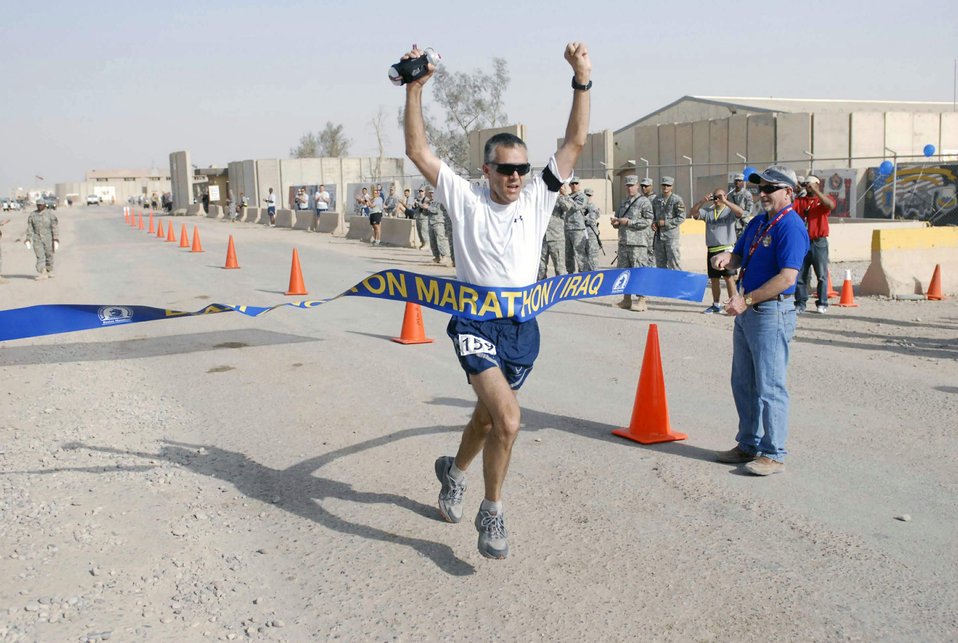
Runners participate in Boston Marathon-Iraq

Maj. Harland Peelle, stationed at Forward Operating Base Delta, Iraq, raises his arms in triumph after being the first runner to cross the finish line April 18 during the 5th Annual Boston Marathon-Iraq held at Contingency Operating Base Adder.